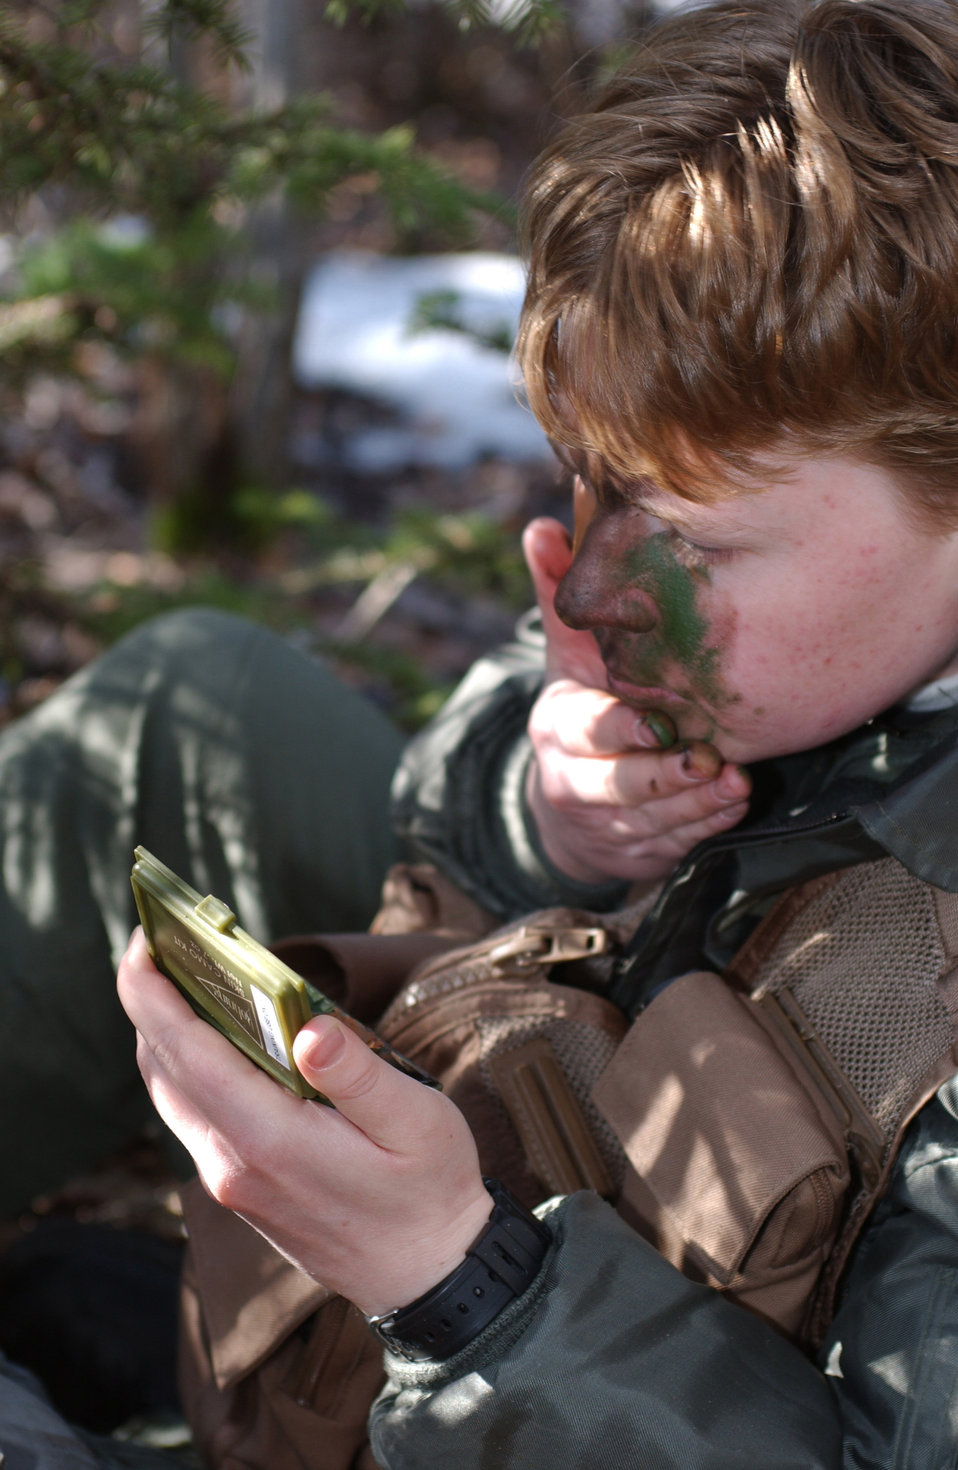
Put your war face on

EIELSON AIR FORCE BASE, Alaska - First Lt. Allena Lewis applies